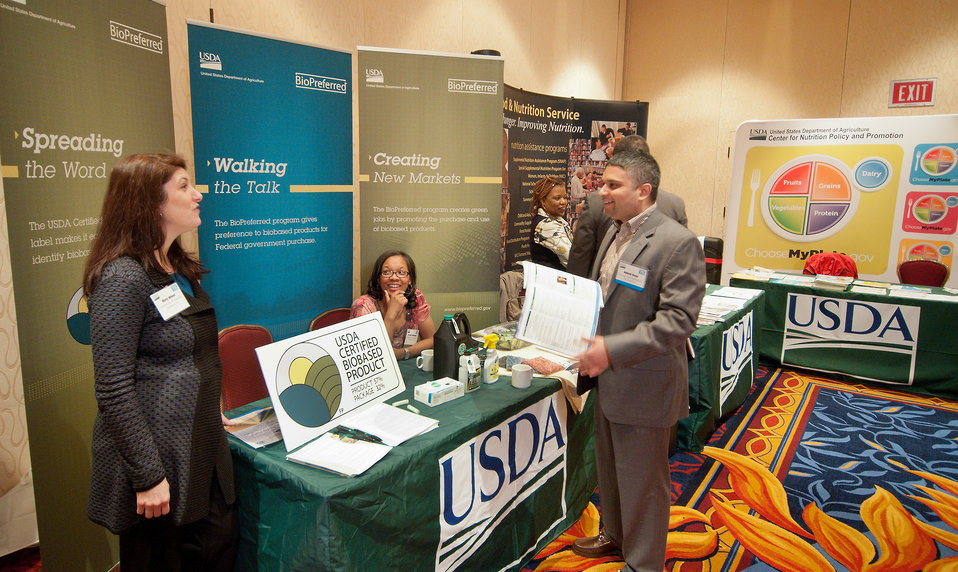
From left: Marie Wheat, Vernell Thompson, Biopreferred Program, United States Department of Agriculture and Aakash Doshi, CitiGroup Global Markets, Inc., New York, New York. Doshi asked about the United States Department of Agriculture Biopreferred program at the 2012 Agricultural Outlook Forum, “Moving Agriculture Forward, Growing, Innovating and Celebrating 150 Years” held at the Crystal gateway Marriott Hotel Arlington, Virginia, Friday, February 24, 2012. This year's forum coincides with the 150th anniversary of the Department of Agriculture addressing economics, marketing, research, food safety, nutrition, conservation, rural development, alternative energy, trade and many other agricultural issues.